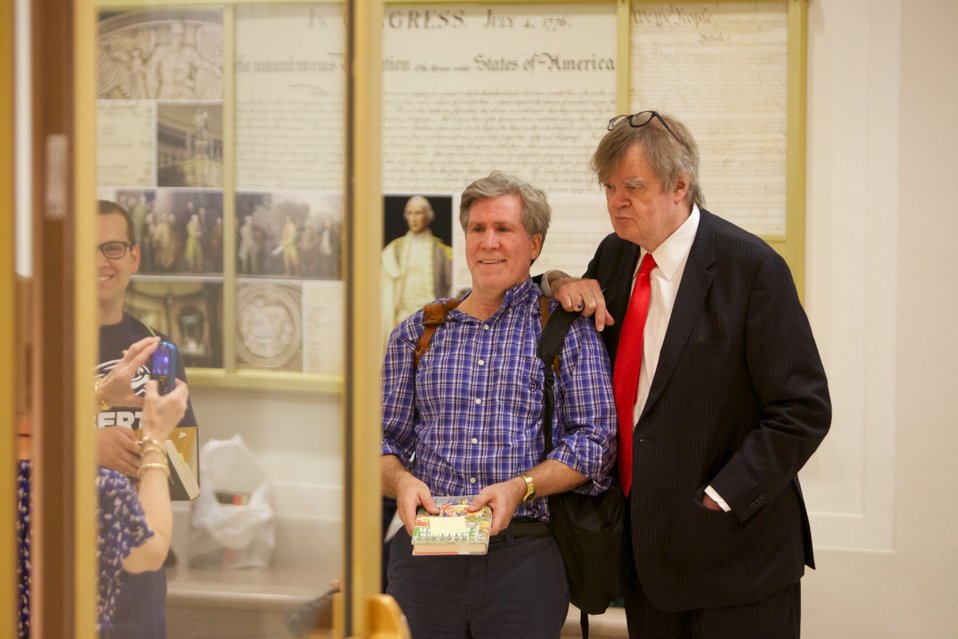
The Keillor Reader